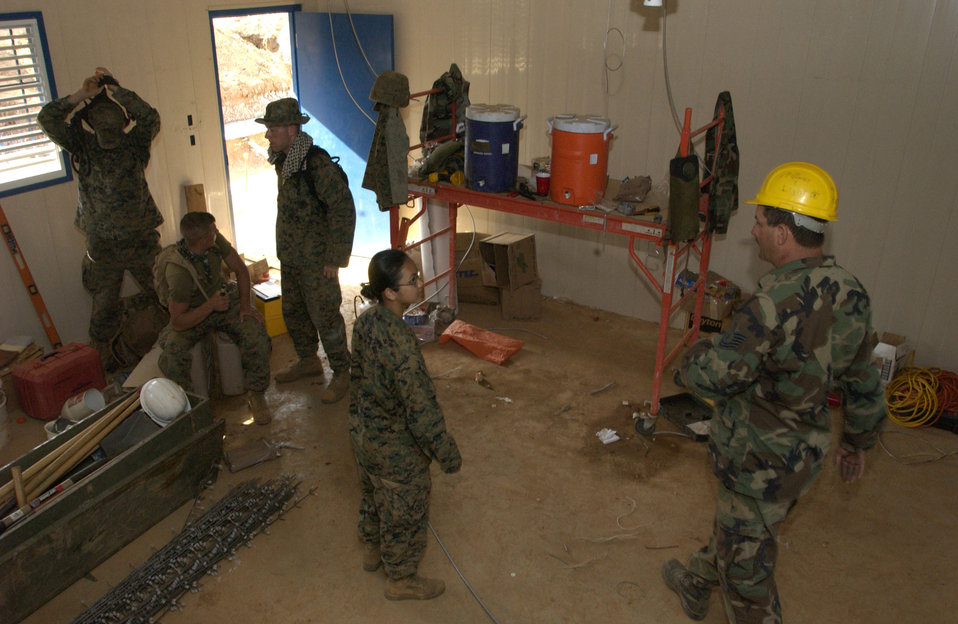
Reservists set example at New Horizons 2005 camp

MACARACAS, Panama -- Tech. Sgt. George Lyon (right) instructs Marine Lance Cpl. Leaphy Khim on construction site protocol here. Both are deployed to Joint Task Force Armadillo, part of New Horizons 2005, a U.S. Southern Command-sponsored readiness training humanitarian exercise. He is a power production craftsman with the 349th Civil Engineer Squadron at Travis Air Force Base, Calif.